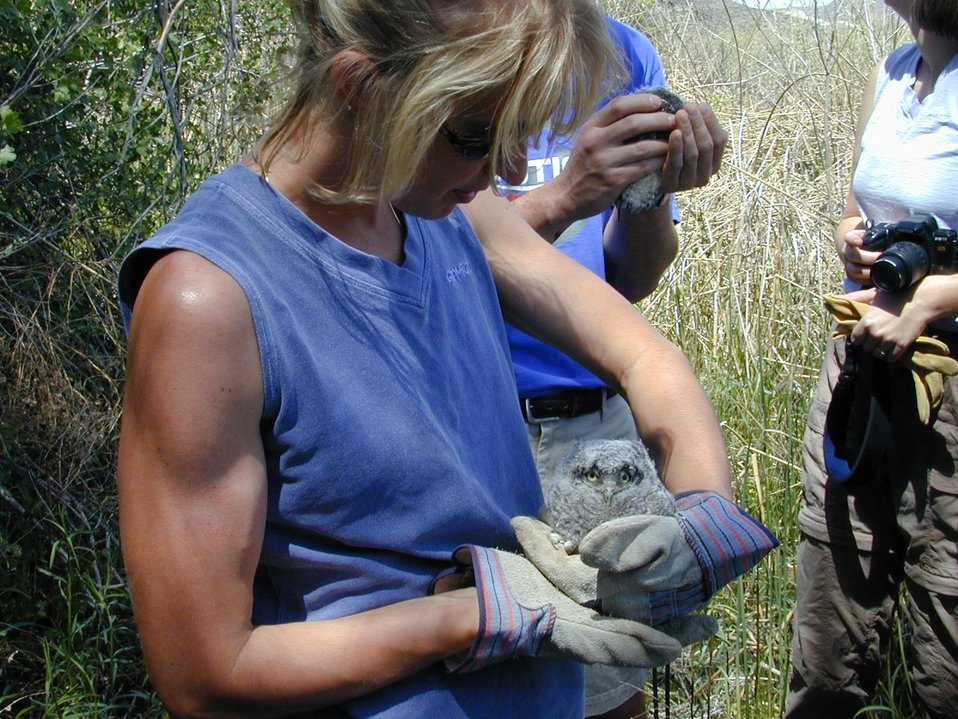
Environmental Education Fire Workshop Timberline High School Fall 2000